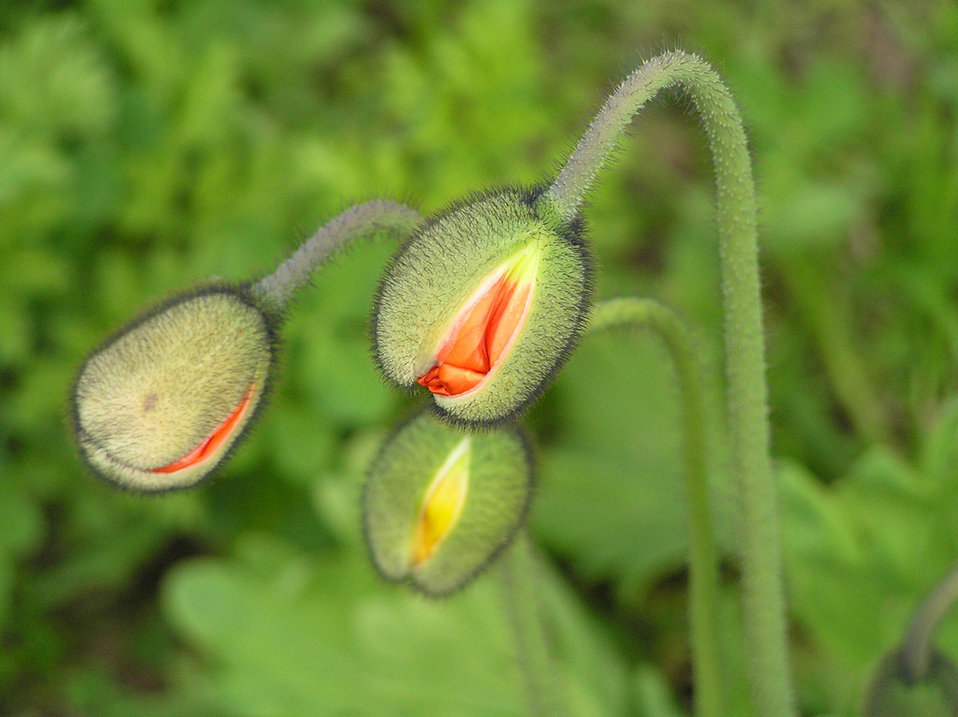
Getting ready for spring

Orange poppy flower before they have opened up.